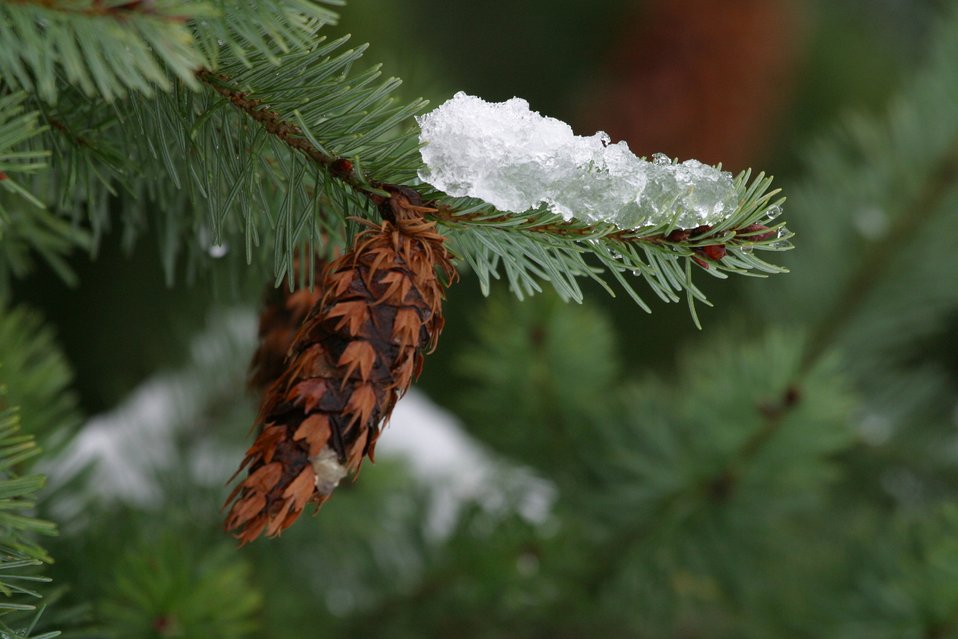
Snow and ice on Douglas Fir Bows and cones during the storm of January 2004.